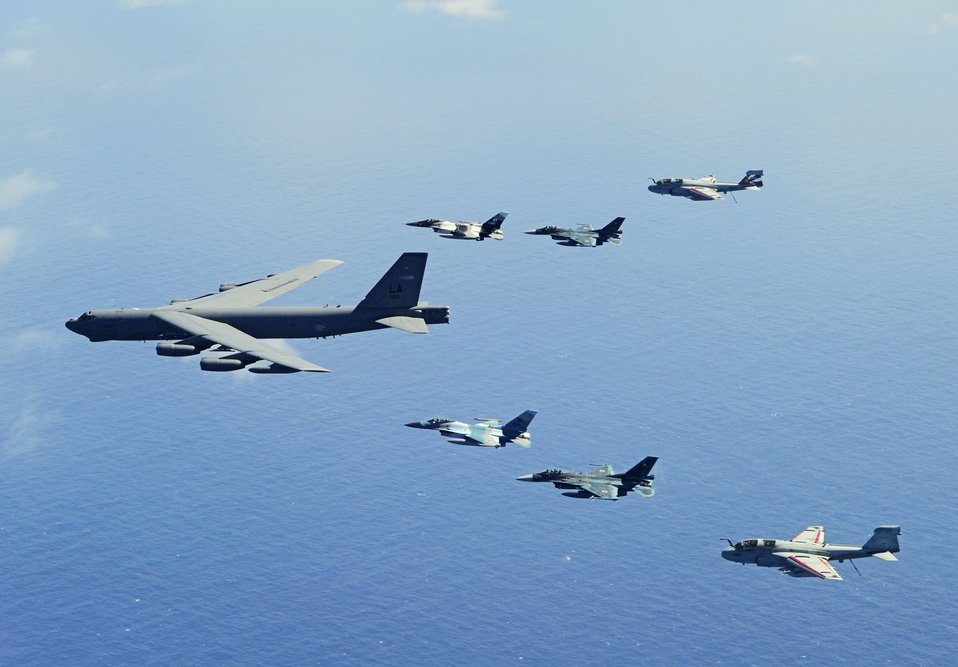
Follow the leader

A B-52 Stratofortress leads a formation of two F-16 Fighting Falcons; two Japan Air Self-Defense Force F-2 attack fighters and two U.S. Navy EA-6B Prowlers Feb. 15, 2010 near Guam during Exercise Cope North.